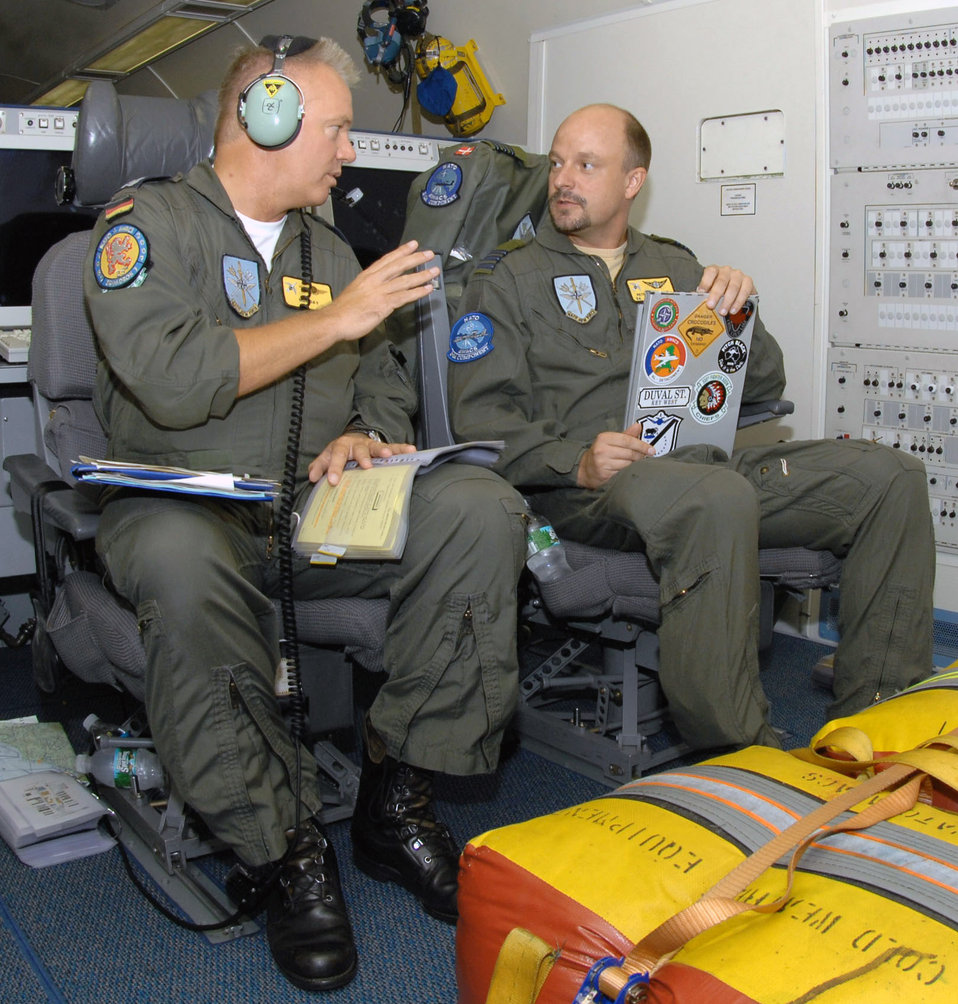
NATO AWACS conducts Strike Eagle dogfights

German Lt. Col. Raimond Schulz and Danish Maj. Peter Boersting discuss preflight procedures on a NATO E-3A Sentinel, an airborne warning and control systems aircraft Aug. 15 at Seymour Johnson Air Force Base, N.C. On the aircraft there are Airmen from Turkey, Portugal, United States, Denmark, Germany, Greece and Canada.